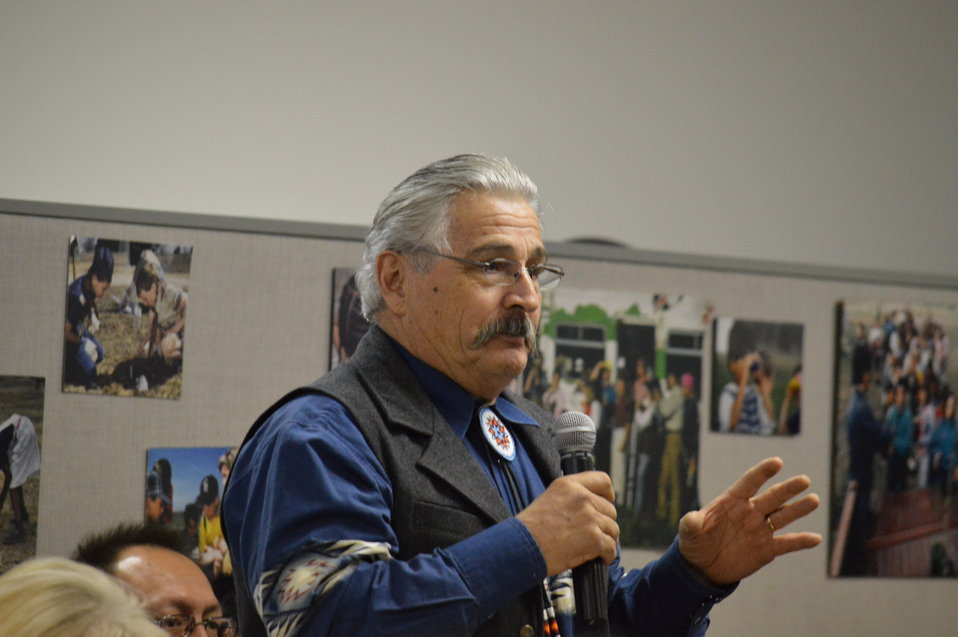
Eagle Summit III

Questions and comments are raised at the Eagle Summit III in Denver, Colorado on March 20, 2014 at the Rocky Mountain Arsenal National Wildlife Refuge.